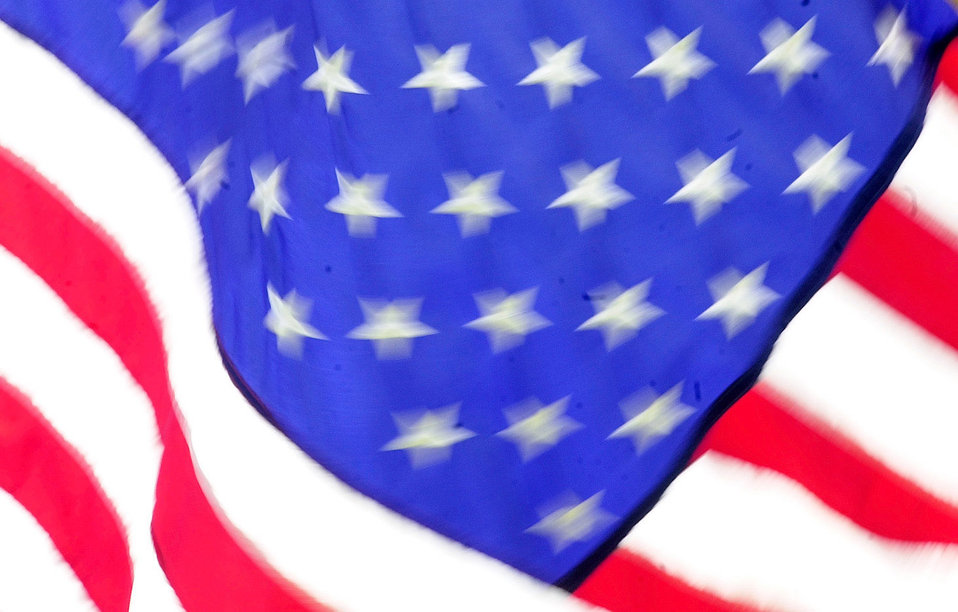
National Day of Prayer and Remembrance

WASHINGTON -- Memorial services were held on the grounds overlooking the Pentagon as part of the Sept. 14, National Day of Prayer and Remembrance. President George W. Bush declared the day in the wake of suspected terrorist attacks on Sept. 11, which resulted in extensive loss of life and damage to the Pentagon and the twin towers of the World Trade Center in New York City.